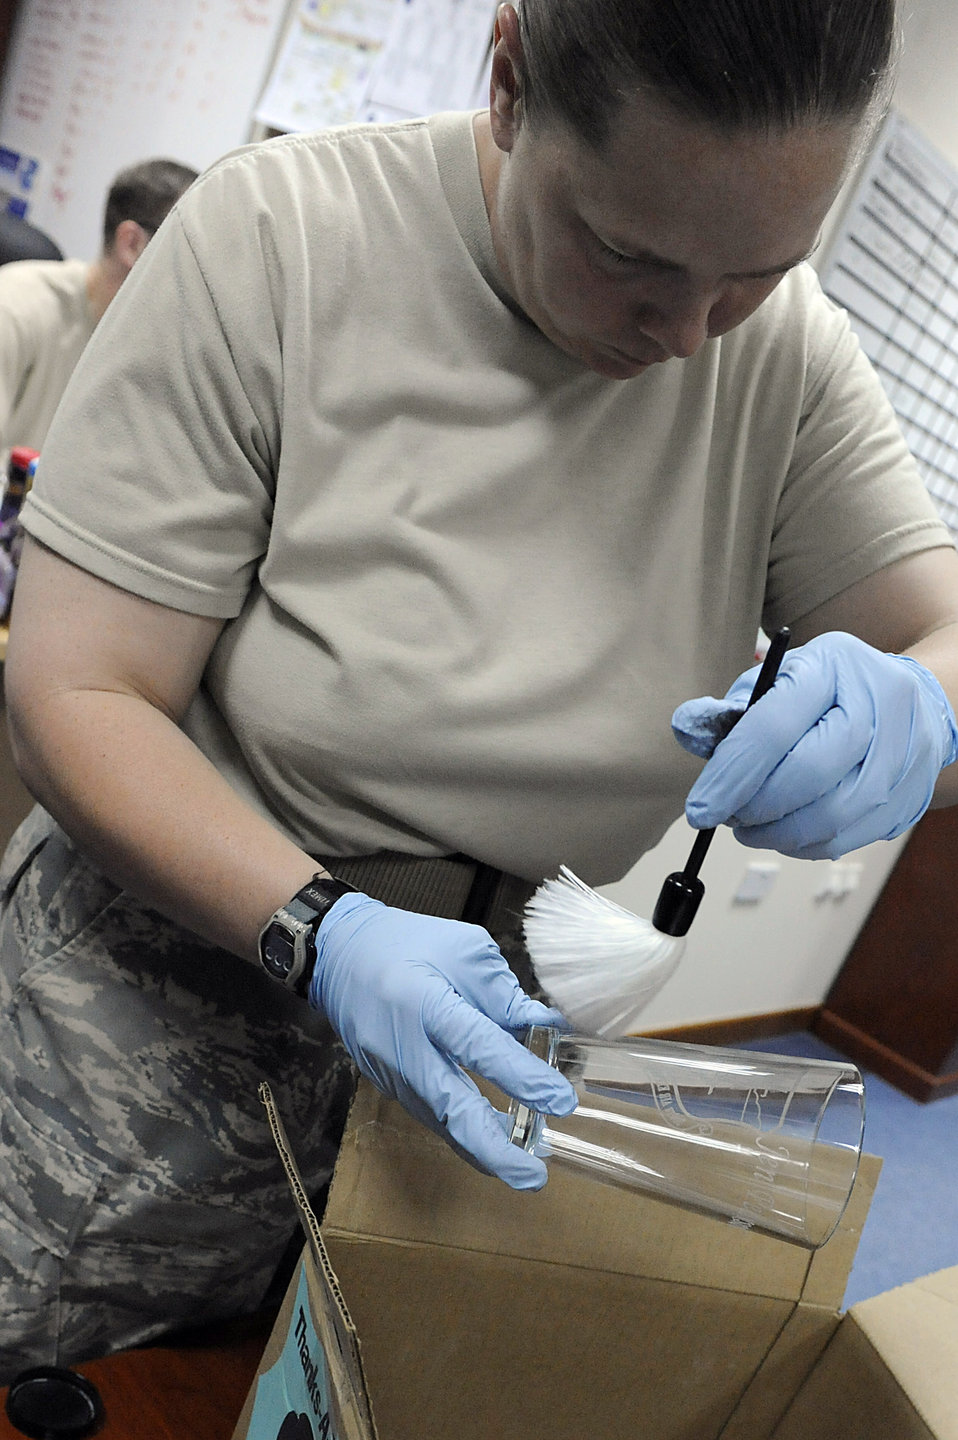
Practice keeps investigative skills sharp

Tech. Sgt. Kathy Trim dusts a glass for prints April 11 at an air base in Southwest Asia. The dusting was done for practice and gave Sergeant Trim a way to keep her skills sharp and ready if needed. Sergeant Trim is assigned to the 380th Expeditionary Security Forces Squadron, and is deployed from McGuire Air Force Base, N.J.